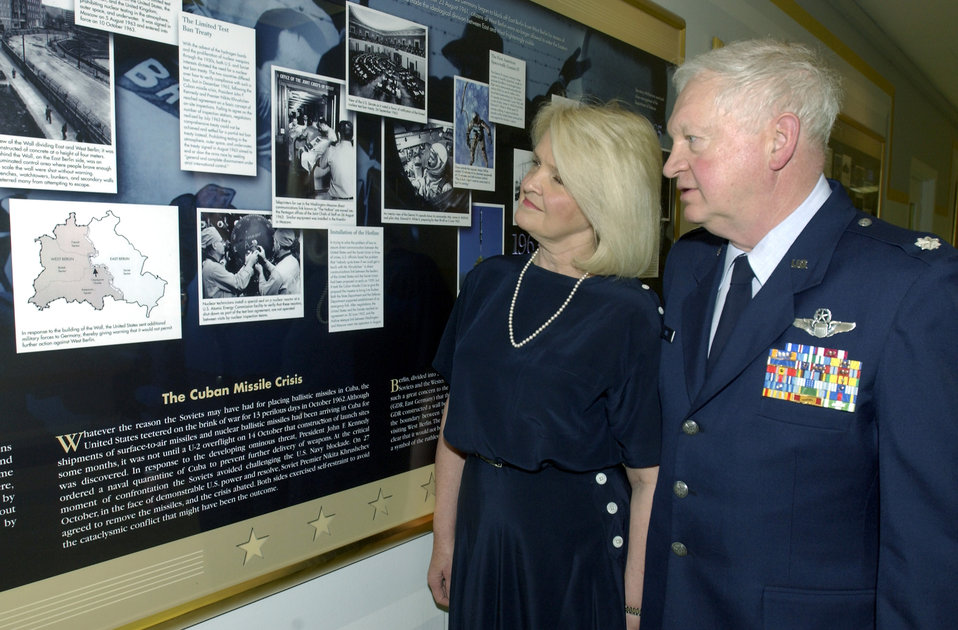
Recalled officer retires -- again

WASHINGTON -- Lt. Col. Theron Sims and his wife, Bonnie, look at a Cuban Missile Crisis display at the Pentagon. Colonel Sims, who is on terminal leave for the second time, first joined the military as an enlisted Marine in 1962. He retired from the Air Force in 1989 only to rejoin the service in 2002 as part of the Rated Officer Recall Program.